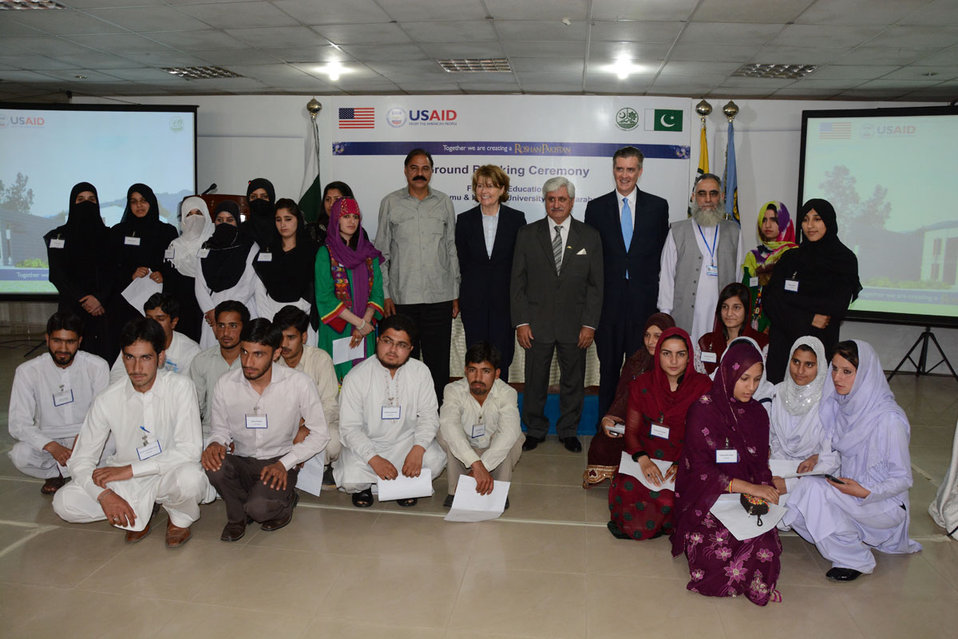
The United States Ambassador to Pakistan, Richard Olson broke ground for a U.S. funded construction of a new Faculty of Education building in Muzaffarabad, AJK. 37